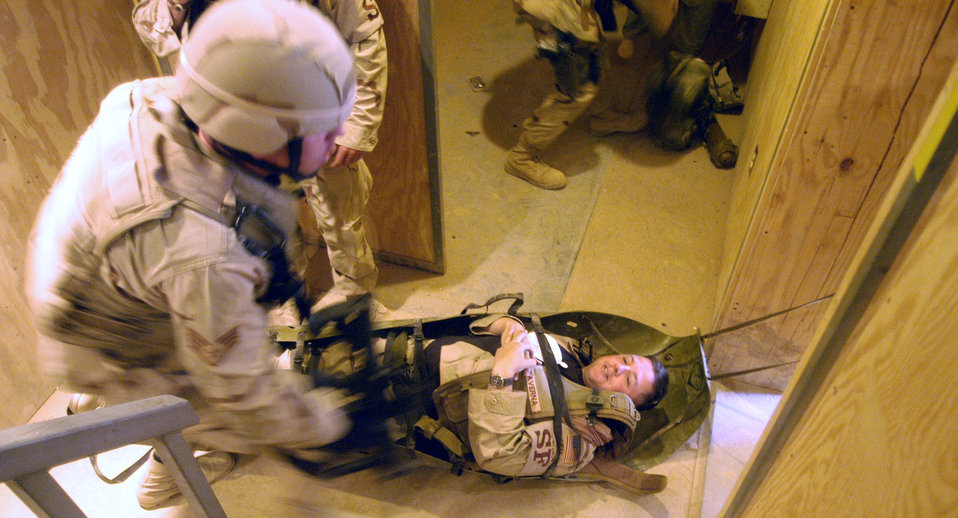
Security Forces get lifesaving training

Tech. Sgt. Robert Taverna role-plays as a wounded Airman during a security forces combat lifesaver exercise at Bagram Air Base, Afghanistan, on Thursday, June 15. It's the job of his squad mates, including Staff Sgt. Thomas McMahon (left), to transport the litter he is on to a waiting ambulance. Both sergeants are deployed to the 455th Expeditionary Security Forces Squadron from the 514th Air Mobility Wing at McGuire Air Force Base, N.J.